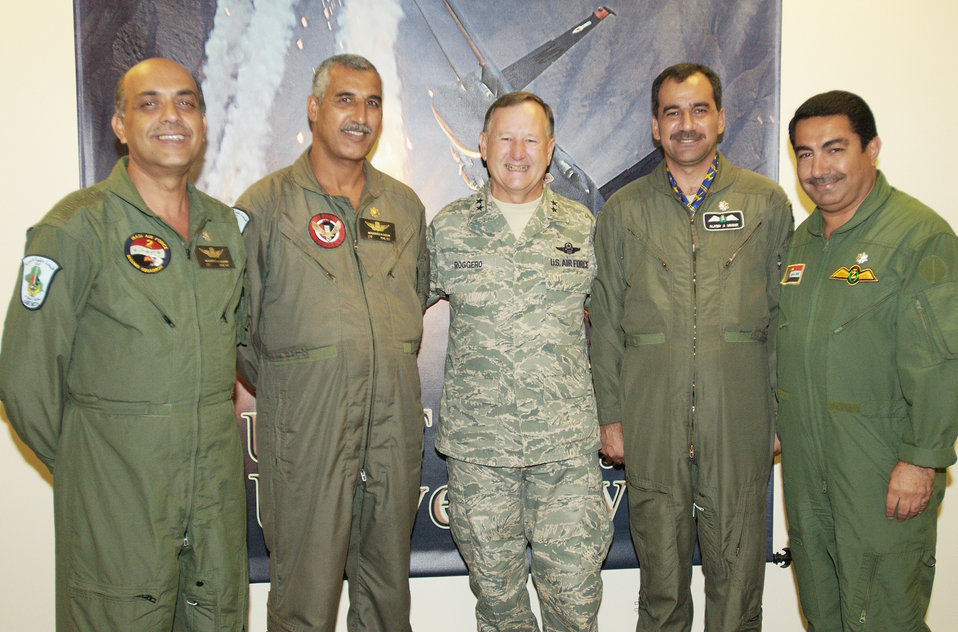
Iraqi students attend safety course

Maj. Gen. Frederick Roggero, Air Force chief of safety and Air Force Safety Center commander, welcomes four Iraqi students to the AFSC International Flight Safety Officer Course at Kirtland Air Force Base, N.M. During the 25-plus-year history of the IFSO course, this is the first time Iraqi students have attended, making Iraq the 80th country on the approved course list.